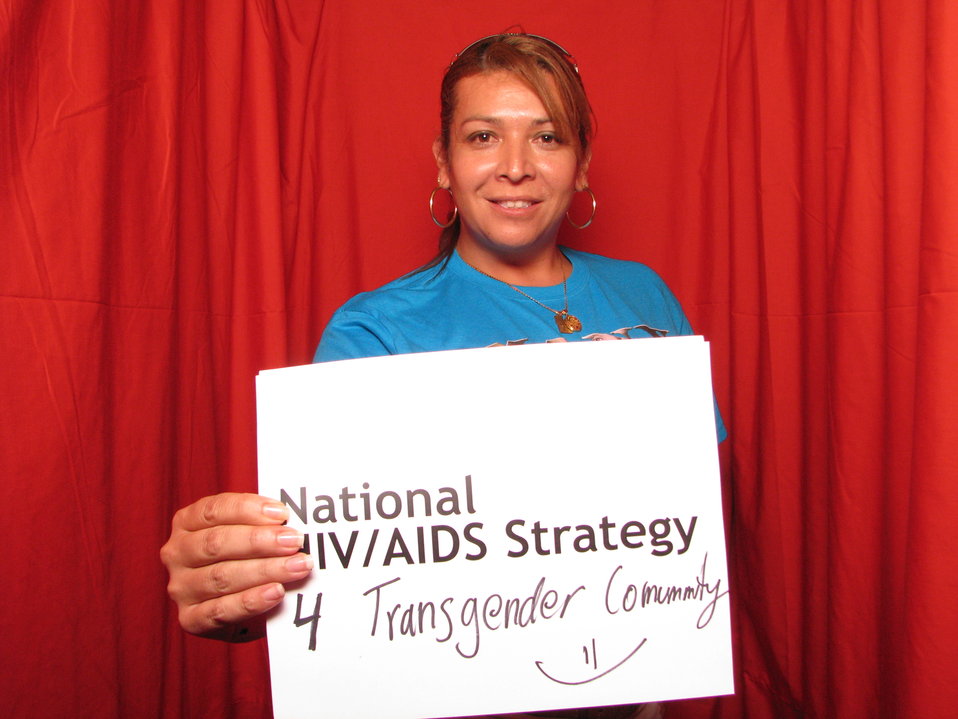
National HIV/AIDS Strategy 4 Transgender Community =)

From the AIDS.gov photo booth at the U.S. Conference on AIDS, September 2010 (Orlando, FL).